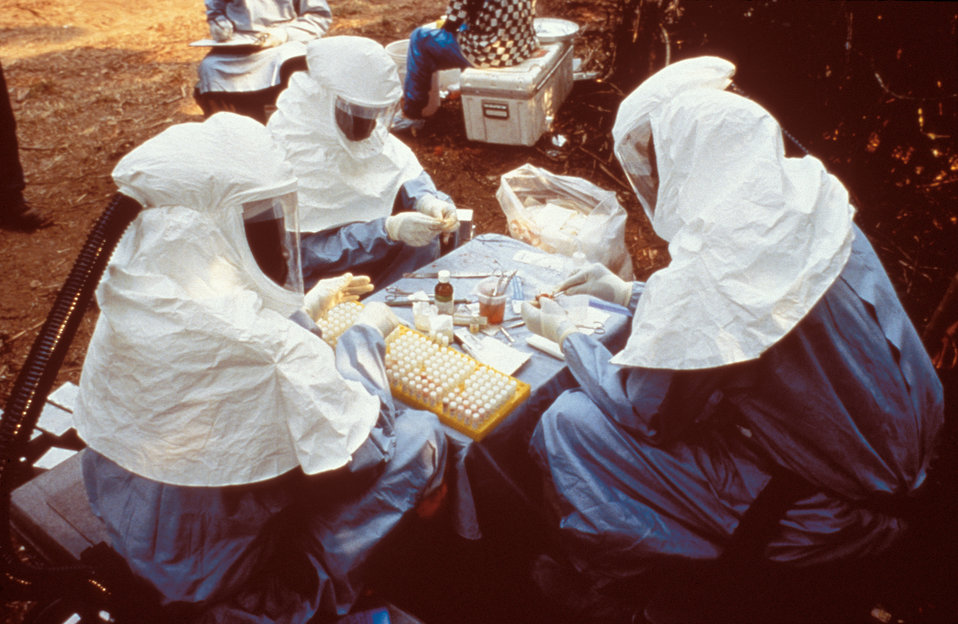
During a 1995 Ebola outbreak these CDC and Zairian scientists took samples from animals collected near Kikwit, Zaire.